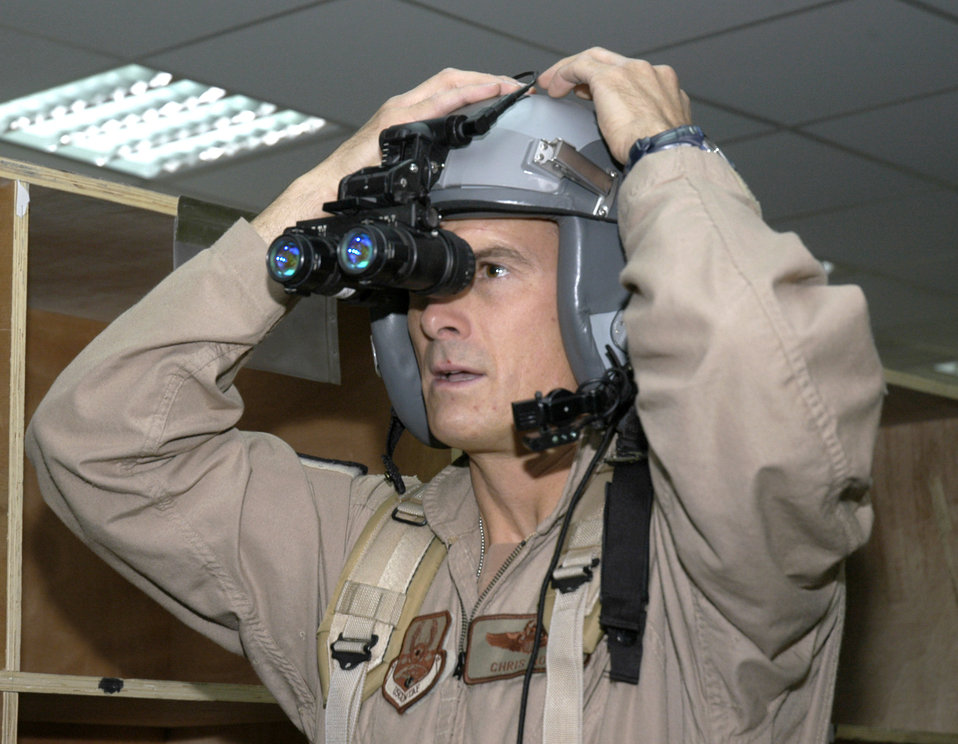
Airlift support

Lt. Col. Chris Goff checks his night-vision goggles at a forward operating base in Southwest Asia Aug. 23. Colonel Goff is an aircraft commander and director of operations for the 738th Expeditionary Airlift Squadron, which is part of the 386th Air Expeditionary Wing. The wing is the primary aerial hub for Operation Iraqi Freedom and provides airlift support for Operation Enduring Freedom and the Horn of Africa.